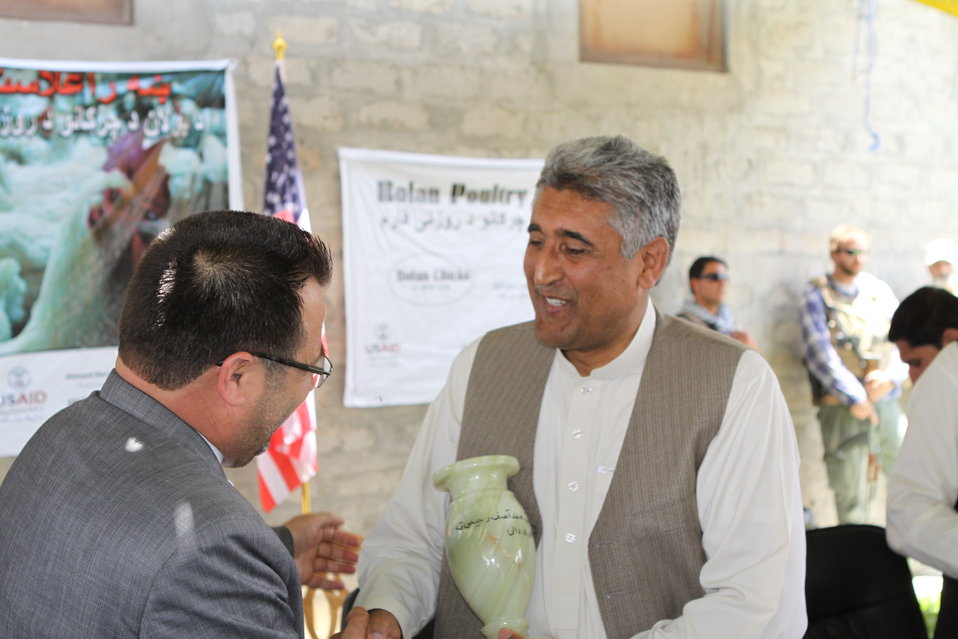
Bolan Poultry Farm